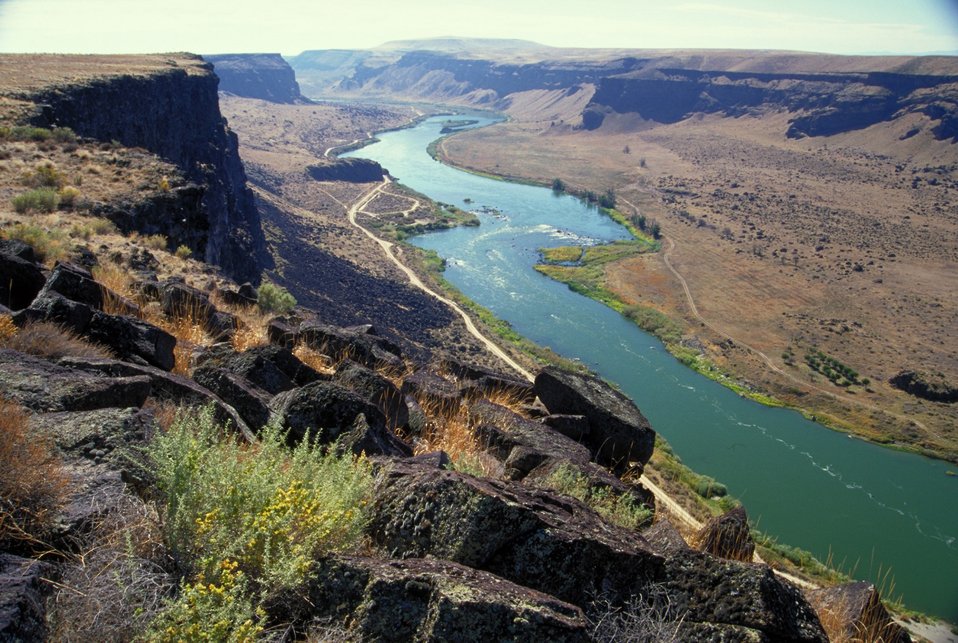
Snake River Birds of Prey National Conservation Area Scenic Four Rivers Field Office Lower Snake River District LSRD